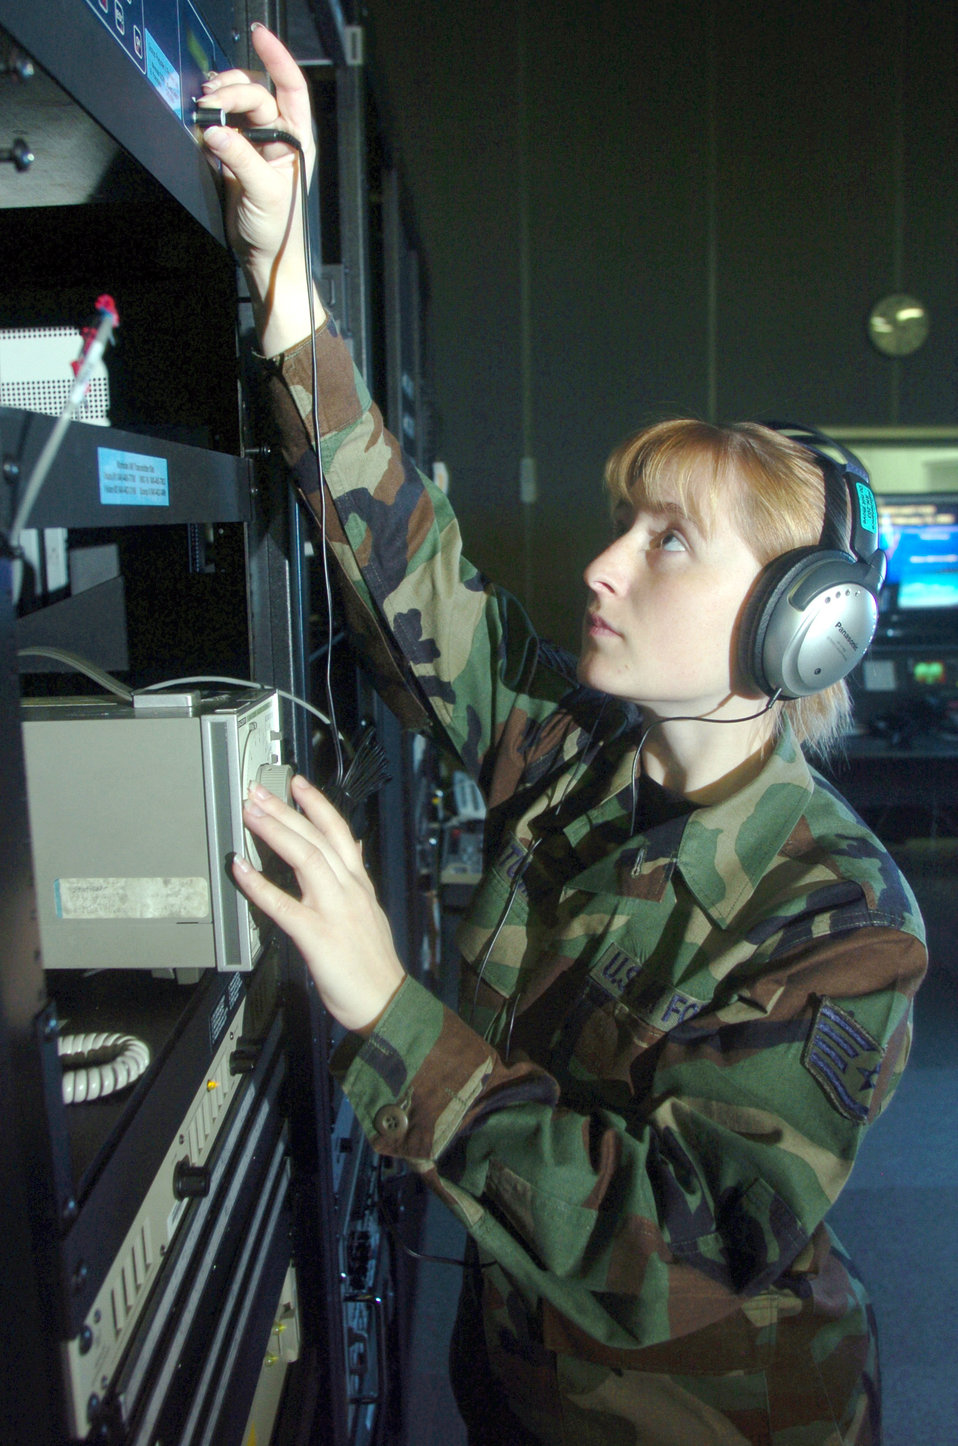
News around the world

YOKOTA AIR BASE, Japan -- Staff Sgt. Michele Stumm checks audio output levels during a routine inspection here Feb. 11. Sergeant Stumm is a broadcast maintenance technician assigned to the Operating Location-C, Air Forces News Agency.